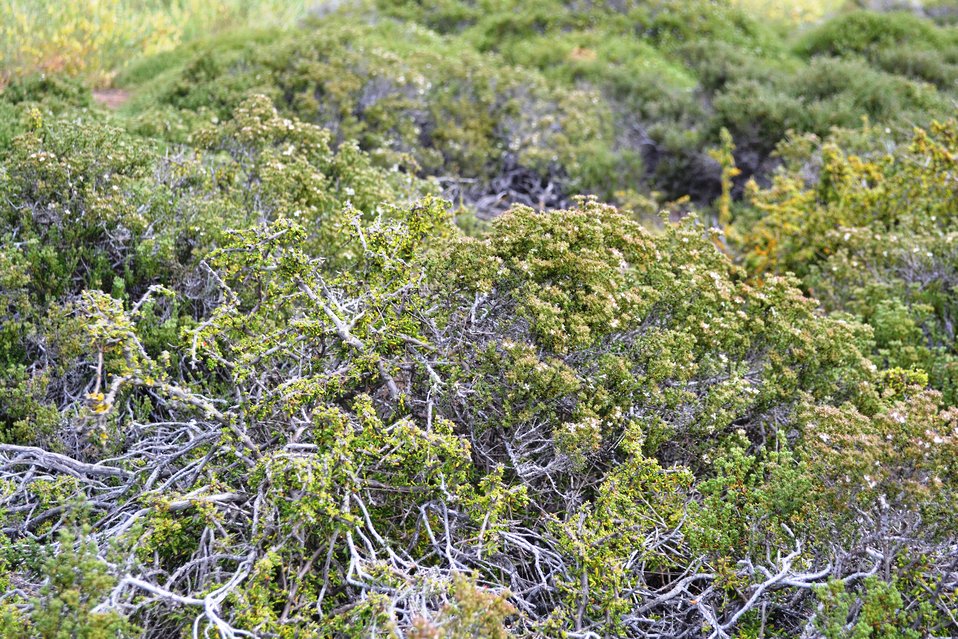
Palmer's Frankenia (Frankenia palmerii)

A rare salt marsh plant, Palmer's frankenia is a woody, low-lying shrub that grows in salt marshes along the coast of California. It has very tiny and plump leaves, with a delicate white and pink flower that blooms in the spring (see closeup photo in this set).